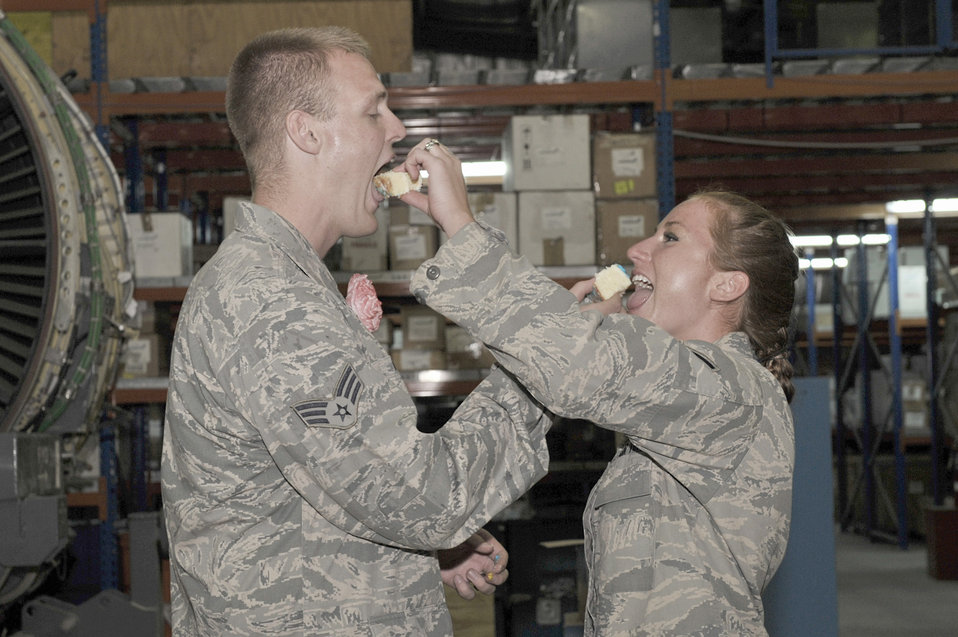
Couple's path to marriage

Senior Airman Donald Nolen and Senior Airman Sheri Nolen feed each other wedding cake after their wedding ceremony Aug 4, 2010, at an air base in Southwest Asia. The Nolens are members of the 380th Expeditionary Aircraft Maintenance Squadron. They were married by proxy on July 12, 2010, through the state of Montana.